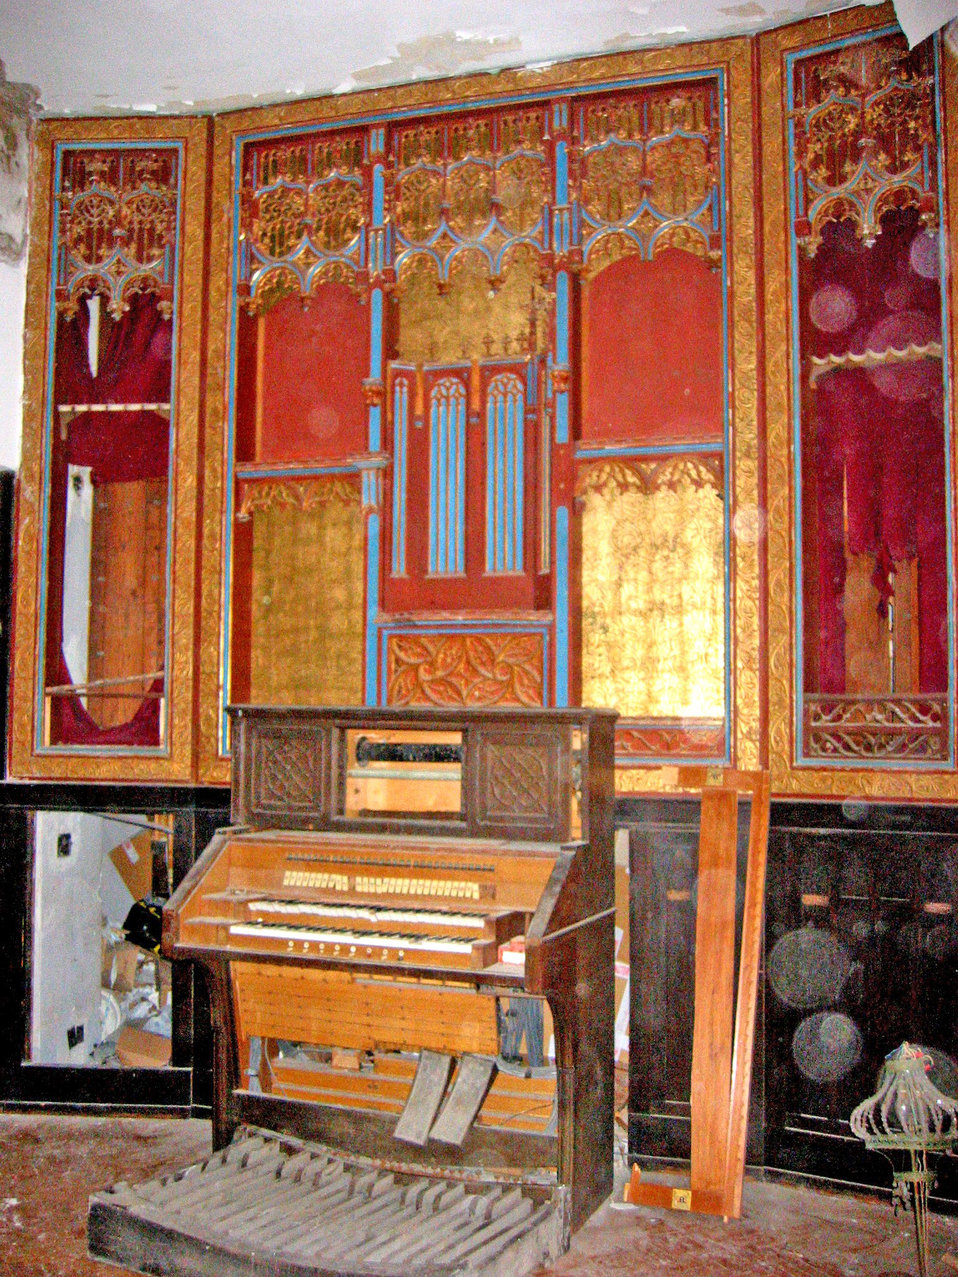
Deutsch: Zustand des Instrumentes vor der Zerstörung (2004) (wegen dem Umbau der Villa zu einem 6 Sterne Luxus Hotel hat man das Instrument einfach da auseinander gerissen und fort geschmissen)